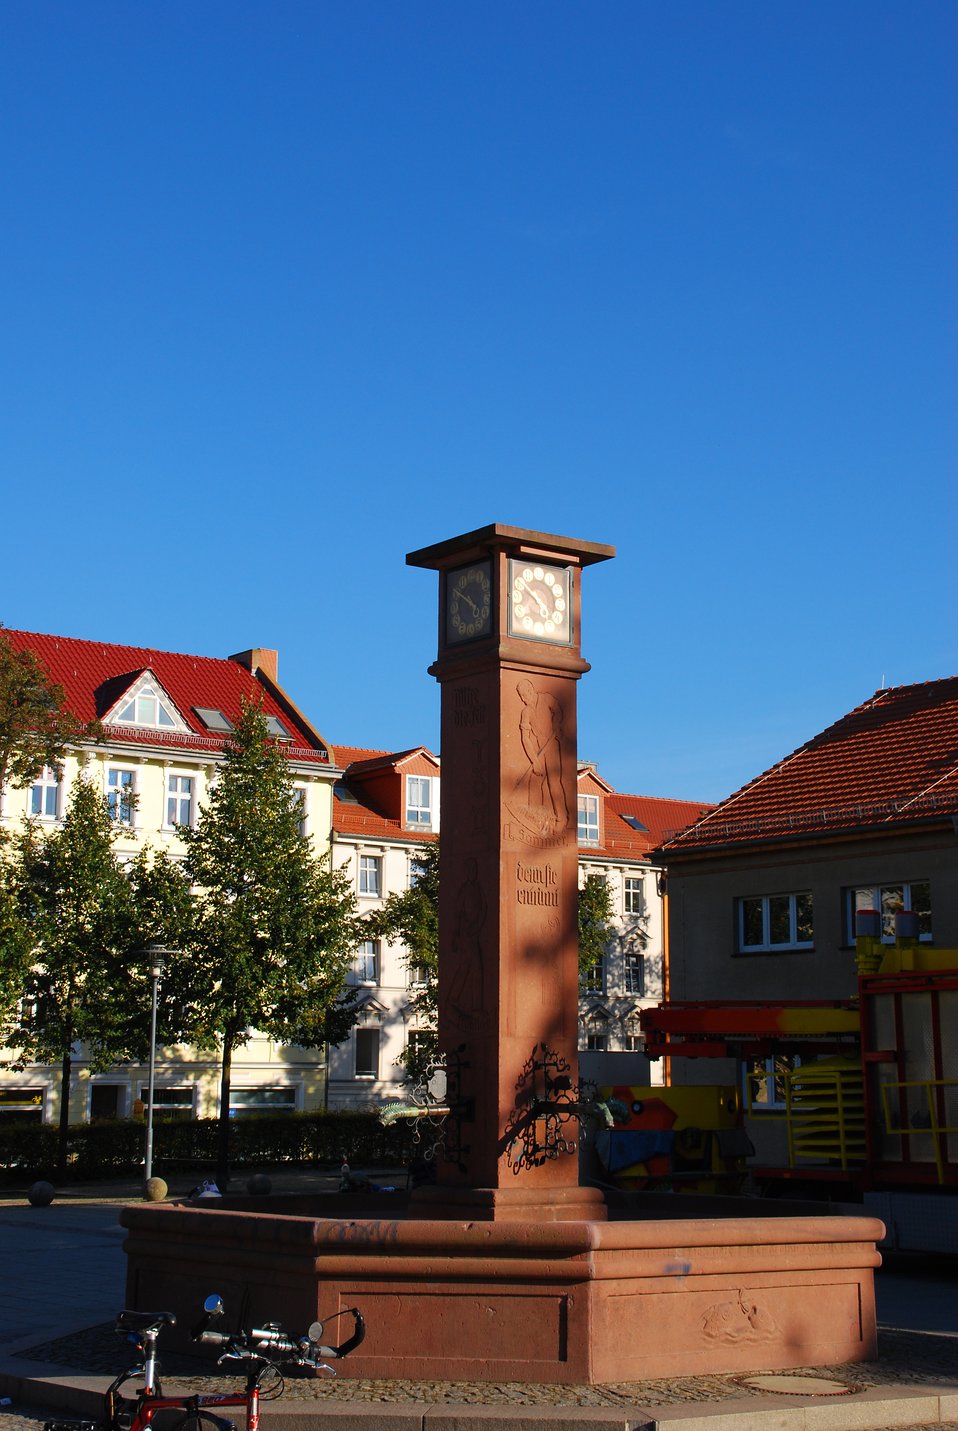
Deutsch: Uhren- oder Jahreszeitenbrunnen Frankfurt (Oder), Leipziger Platz Clock and seasons fountain on square Leipziger Platz in Frankfurt (Oder), Brandenburg, Germany